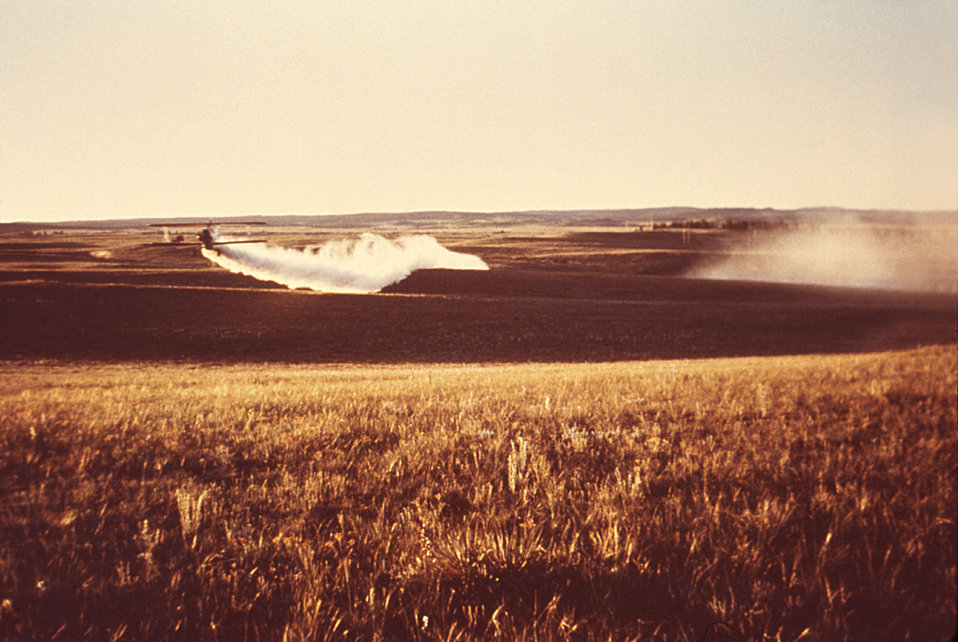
This photograph depicts the flight of a crop dusting spray plane as it flies over a field while dispersing its payload of insecticidal dust.